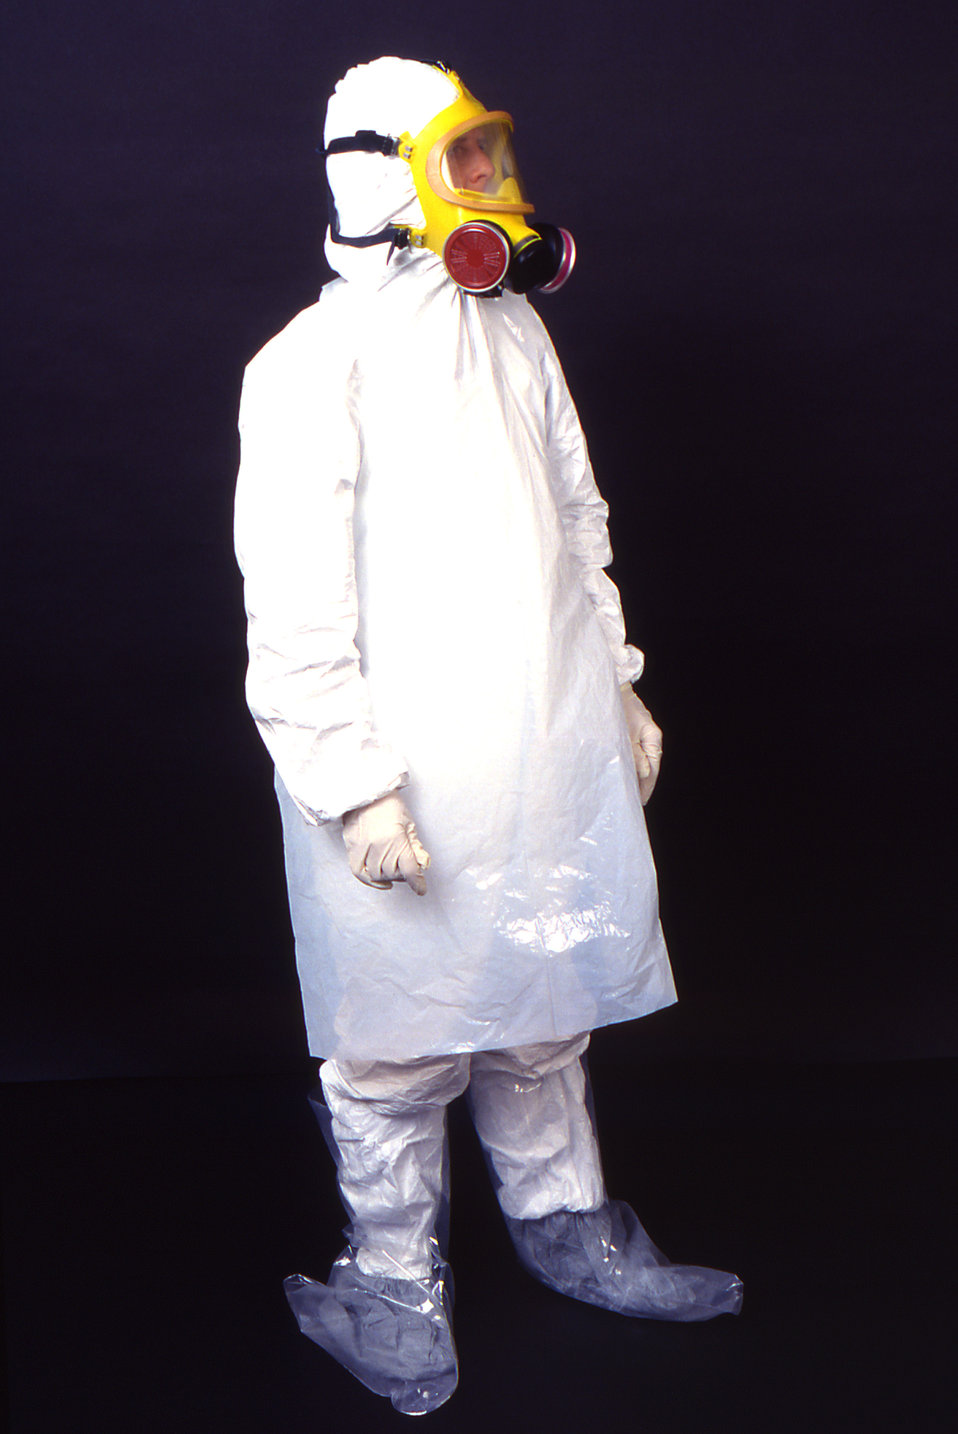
This 1995 image depicts a right anterior-oblique view of a laboratory technician wearing garments usually worn by field techs including a disposable white coverall, a disposable plastic apron, head covering, latex gloves and foot coverings, and a filtered respirator face mask.